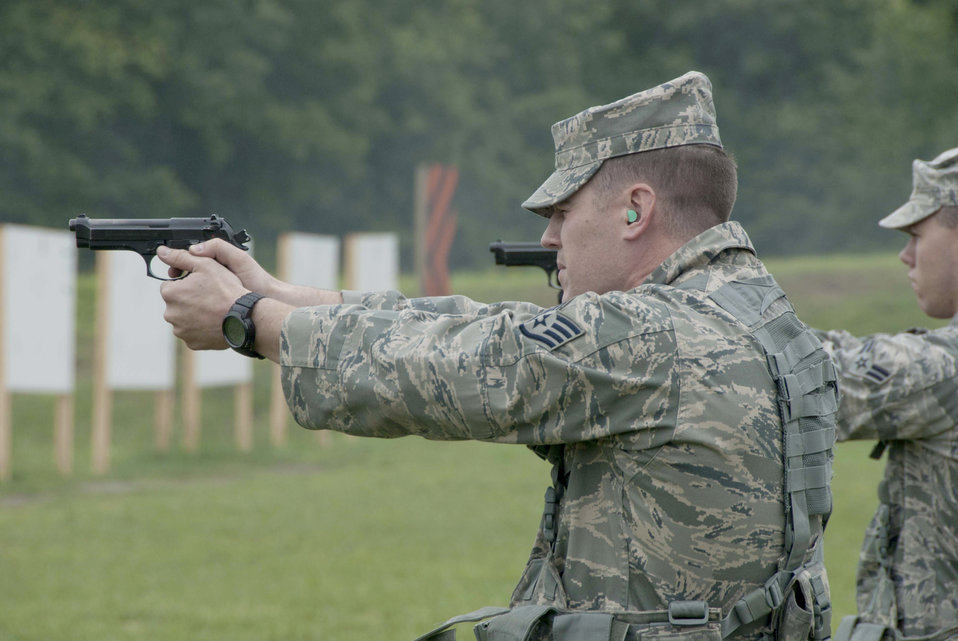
Heavy arms training

Staff Sergeant Aaron Webb fires the Beretta M9 as part of his requalification May 16, 2011, at Arnold Air Force Base, Tenn. Sergeant Webb is assigned to the 134th Security Forces Squadron.